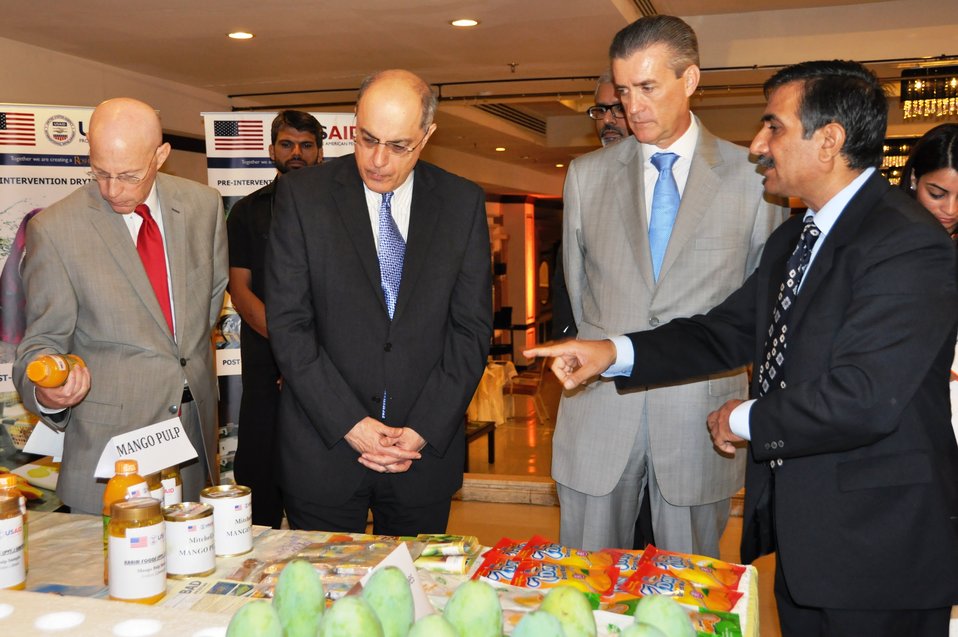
Mango Conference